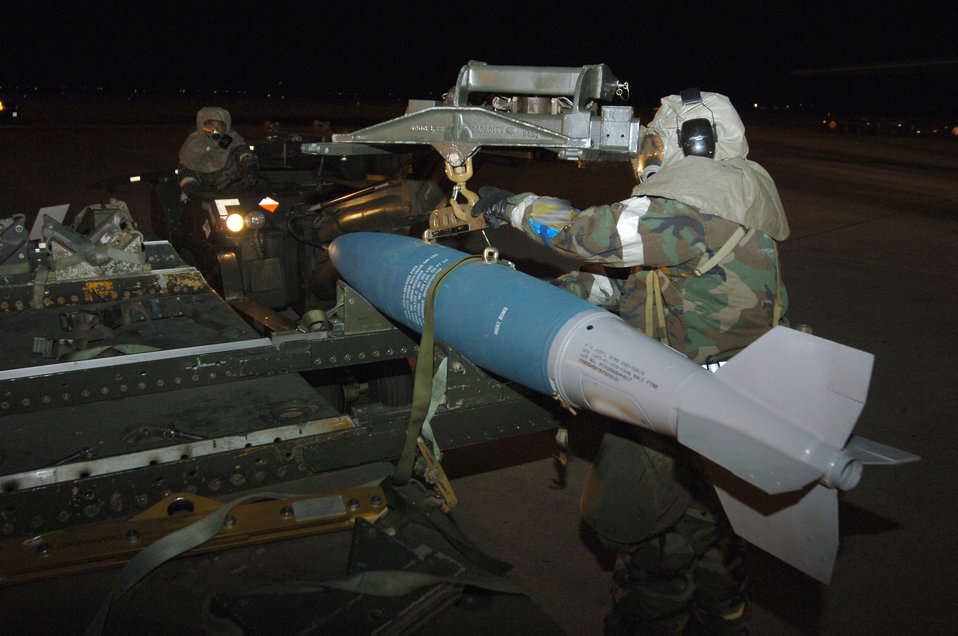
B-1s at the ready

DYESS AIR FORCE BASE, Texas (AFPN) -- Airmen load inert bombs onto a B-1B Lancer during an operational readiness exercise. The Airmen are with the 7th Maintenance Operations Squadron and the 9th Bomb Squadron here. The exercise prepares Airmen here for the upcoming operational readiness inspection and wartime deployments.